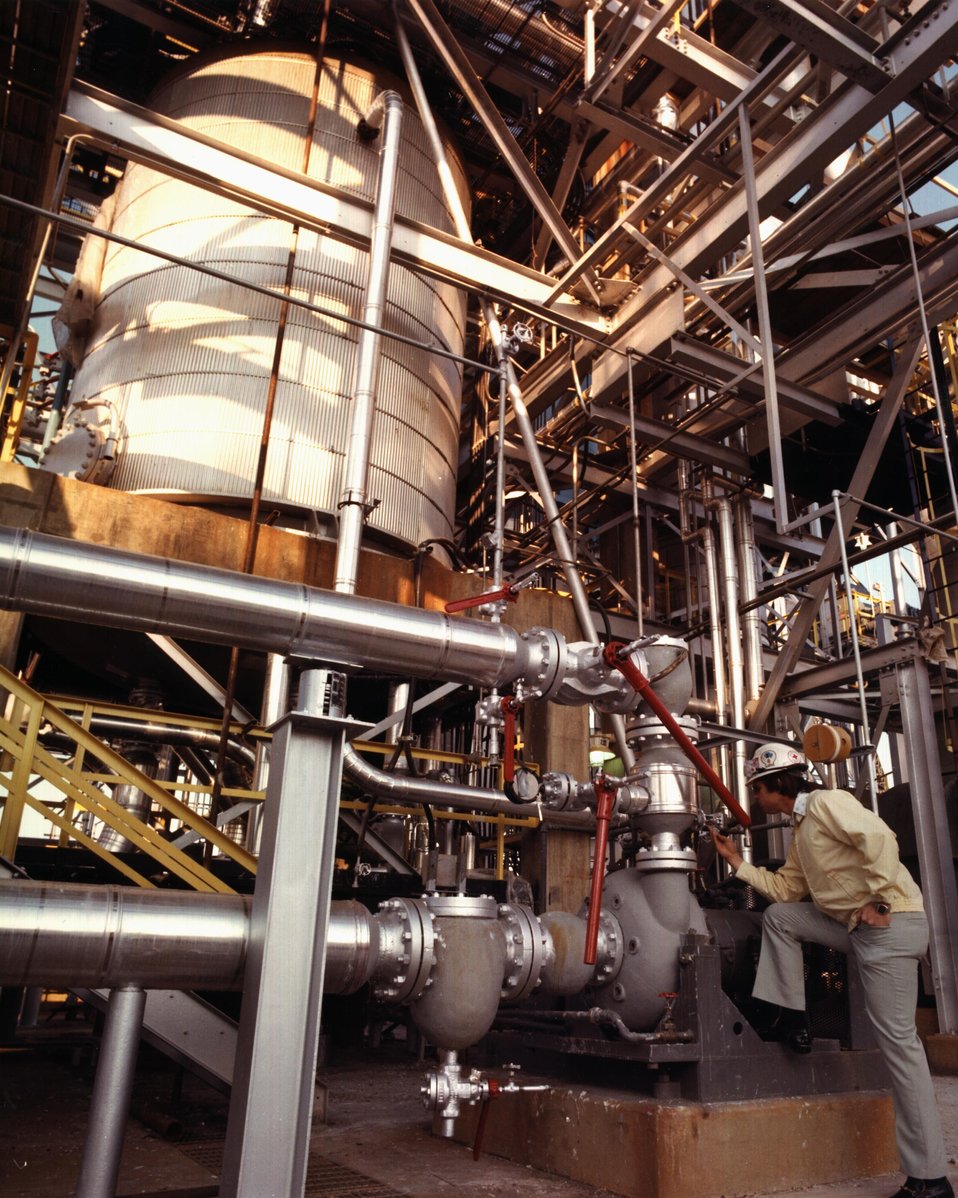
VIEW OF SLURRY MIX TANK DISCHARGE AT THE PARTIALLY CONSTRUCTED H-COAL 600-TONS-PER-DAY PILOT PLANT.